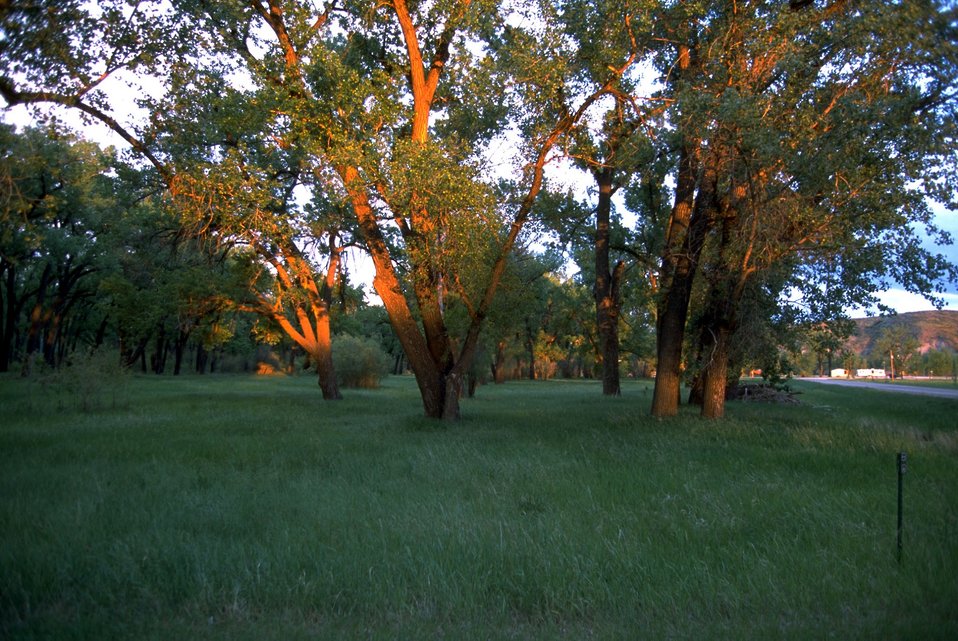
Orange tree trunks surrounded by green grass